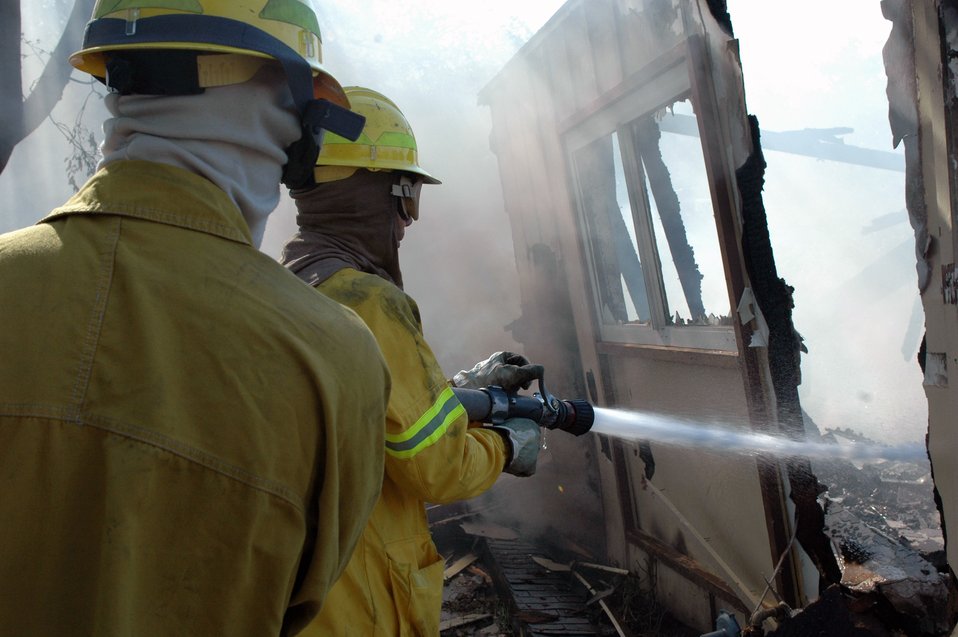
Travis, California firefighters extinguish blaze

Airman 1st Class Steven Moses (left) and Tech. Sgt. Troy Forbes extinguish fires Aug. 16 left in a building destroyed by the eight-alarm fire that spread from off-base onto Travis Air Force Base, Calif. Emergency crews from Travis AFB and surrounding communities worked throughout the night to contain the fire. The fire destroyed 167 unoccupied residental units and damaged another 11 units that were awaiting demolition. Airman Moses is a 60th Civil Engineering Squadron Fire Department firefighter, and Sergeant Forbes is the fire department crew chief.